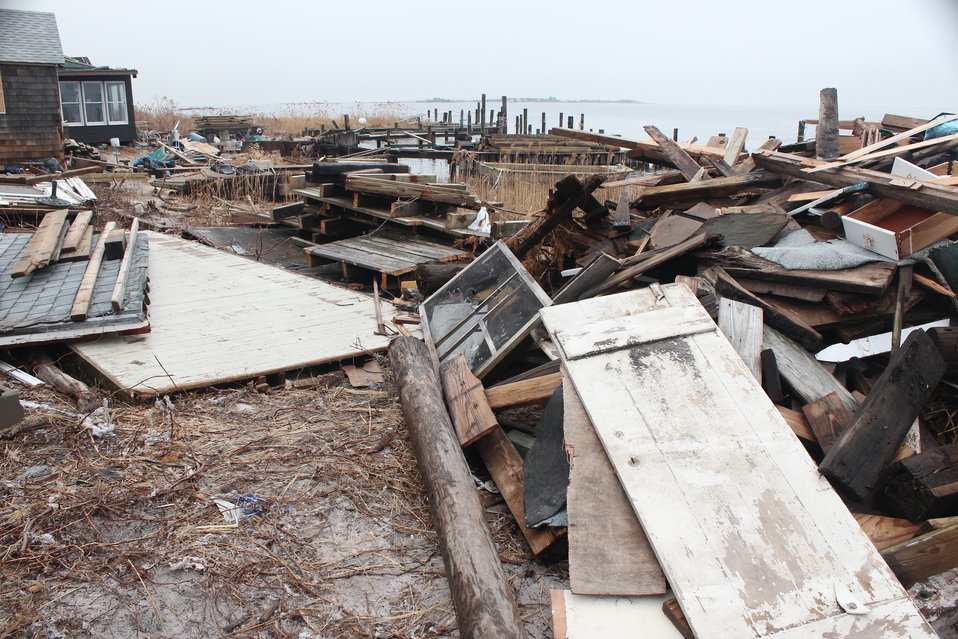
December 8, 2012 Searching for hazardous containers among Sandy’s debris

Some residents have been able to get back to their houses to begin the emotional and arduous task of cleaning up. EPA worked with both Nassau and Suffolk Counties to help distribute information ahead of time to help residents sort through what is potentially hazardous so that they could leave it aside for responders to pick up. In many areas this made the job easier, but some places were still too remote, requiring more care to sort through the debris.